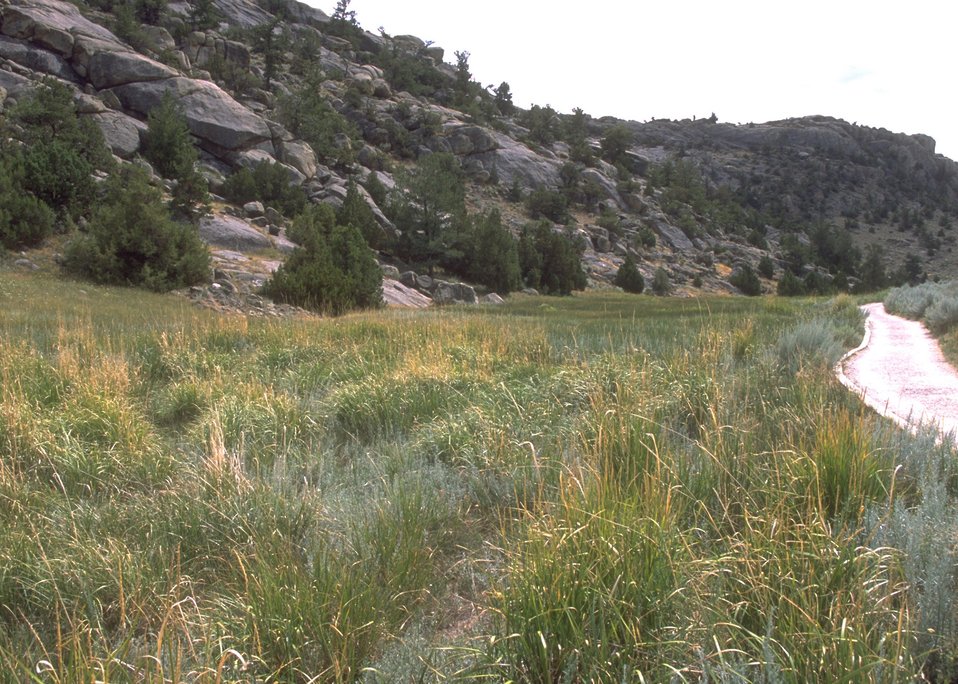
Martin's Cove area, Rawlins Field Office